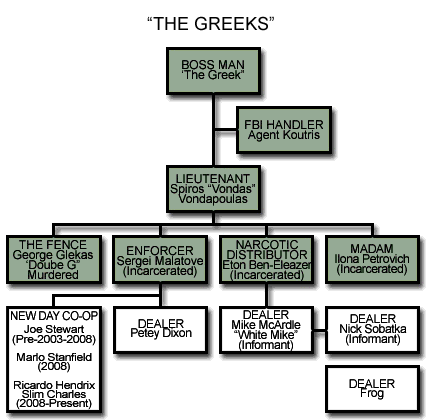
Organizational chart of the fictional organization 'The Greeks' from the TV series The Wire.